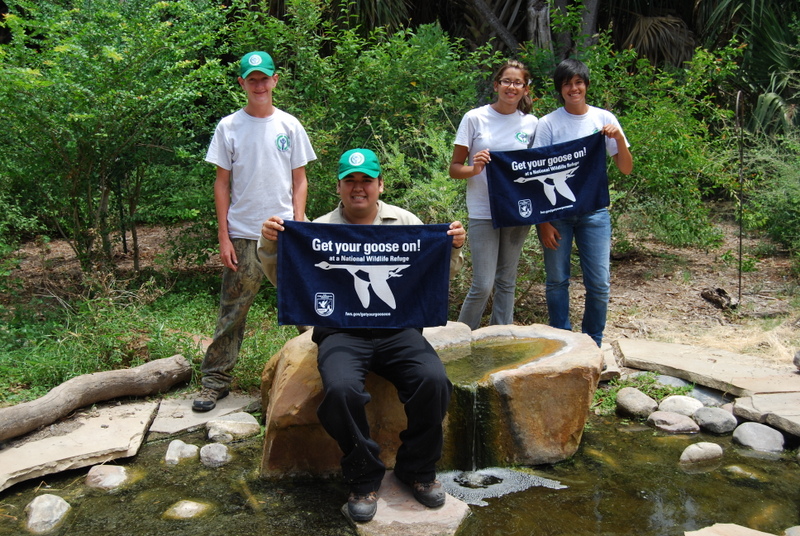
Get Your Goose On!

This Youth Conservation Corps group poses outside by a small pond at Santa Ana National Wildlife Refuge southern Texas.